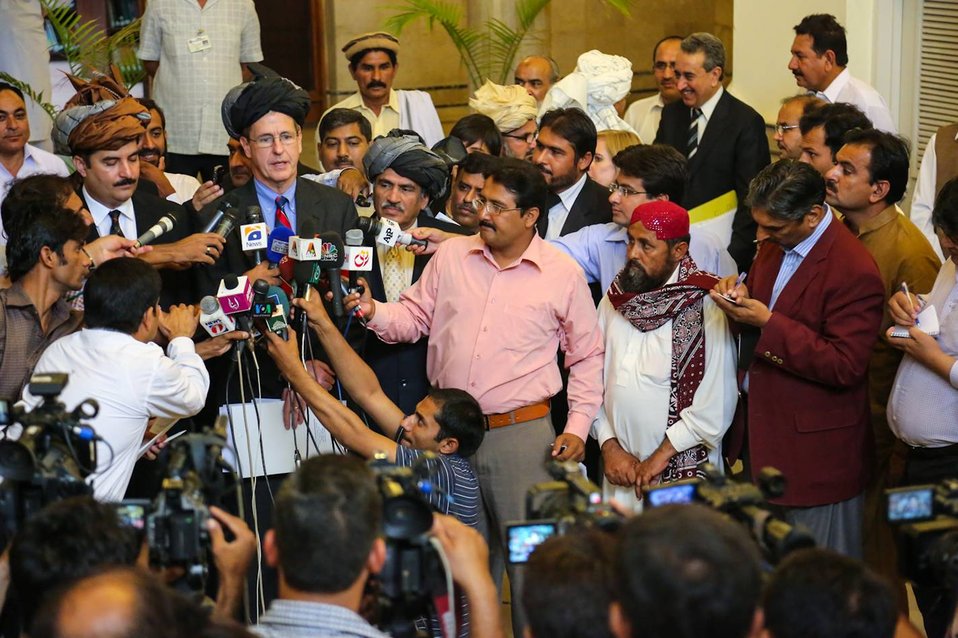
Islamabad, September 12, 2012 - Project Launch Ceremony of Waran Canal Irrigation System